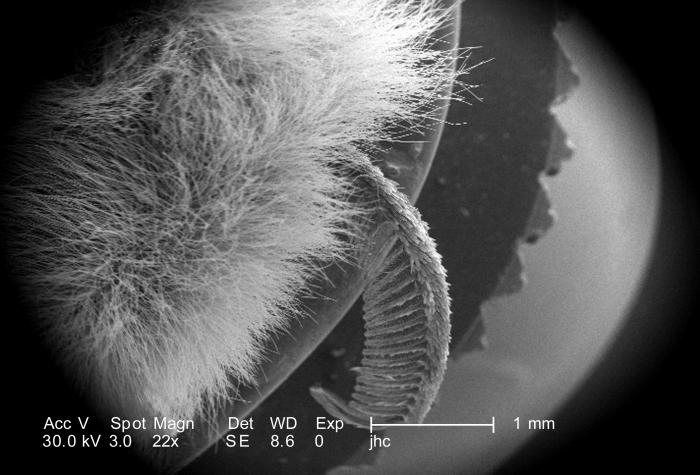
Under a low magnification of 22X, this scanning electron micrograph (SEM) revealed some of the ultrastructural morphology located on the head region of an unidentified white moth, which had been found deceased on the ground in the suburbs of Decatur, Georgia. Note the 'fern-like', curled antenna, which was one on the two emanating from the insect's head region. What appeared to be 'hair', was not hair at all, but a tuft of sensory structures known as 'setae', and are composed of the same material, known as chitin, as the rest of this organism's exoskeleton.